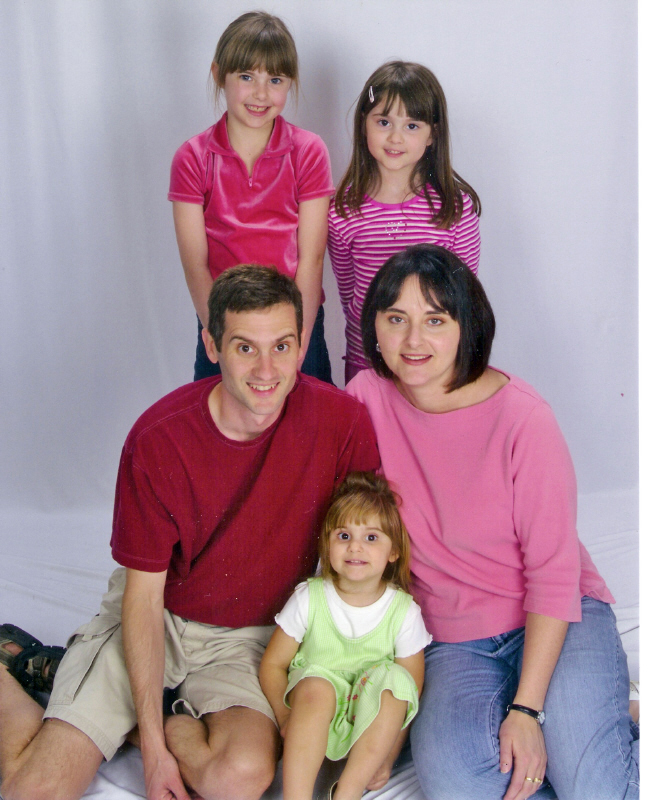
President acknowledges military fathers' sacrifices, contributions

Lt. Col. James